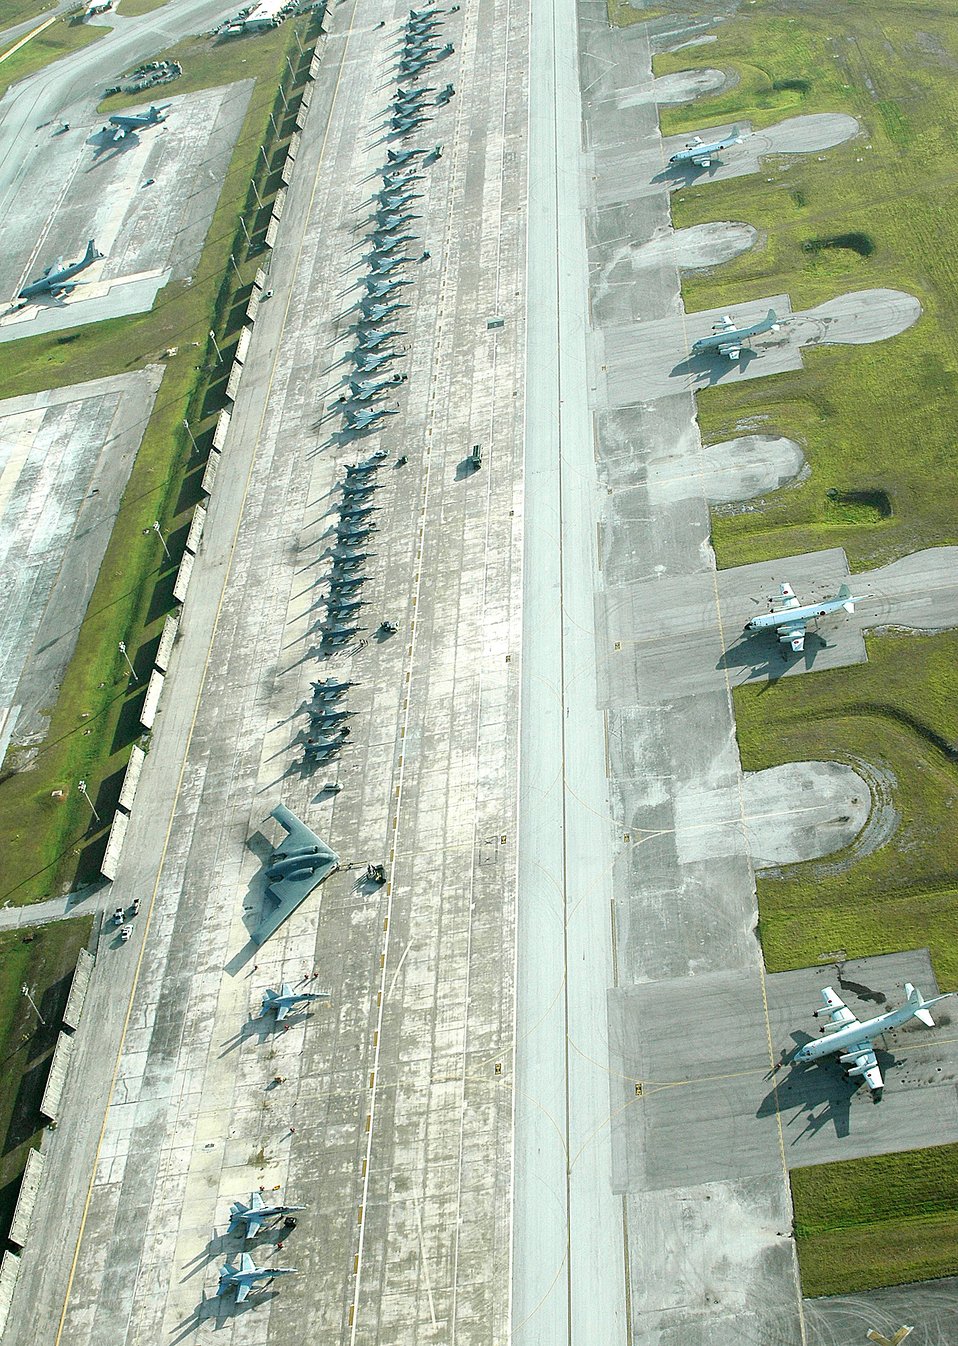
Joint training at Valiant Shield

A B-2 Spirit, F-15 Eagles, F-16 Fighting Falcons, F-18 Hornets and Japanense P-3 Orions line the flightline at Andersen Air Force Base, Guam, for Exercise Valiant Shield on Thursday, June 22. The exercise, which concludes June 23, focuses on integrated joint training in a variety of mission scenarios.